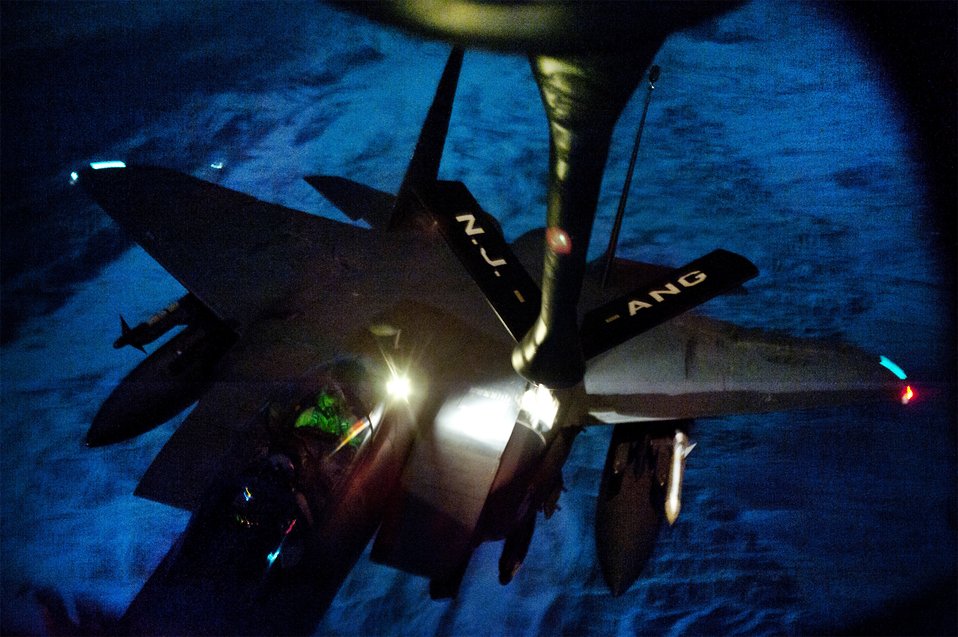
A flying pit stop

An F-15E Strike Eagle is refueled by a KC-135 Stratotanker Jan. 14, 2011, above Afghanistan in support of Operation Enduring Freedom.